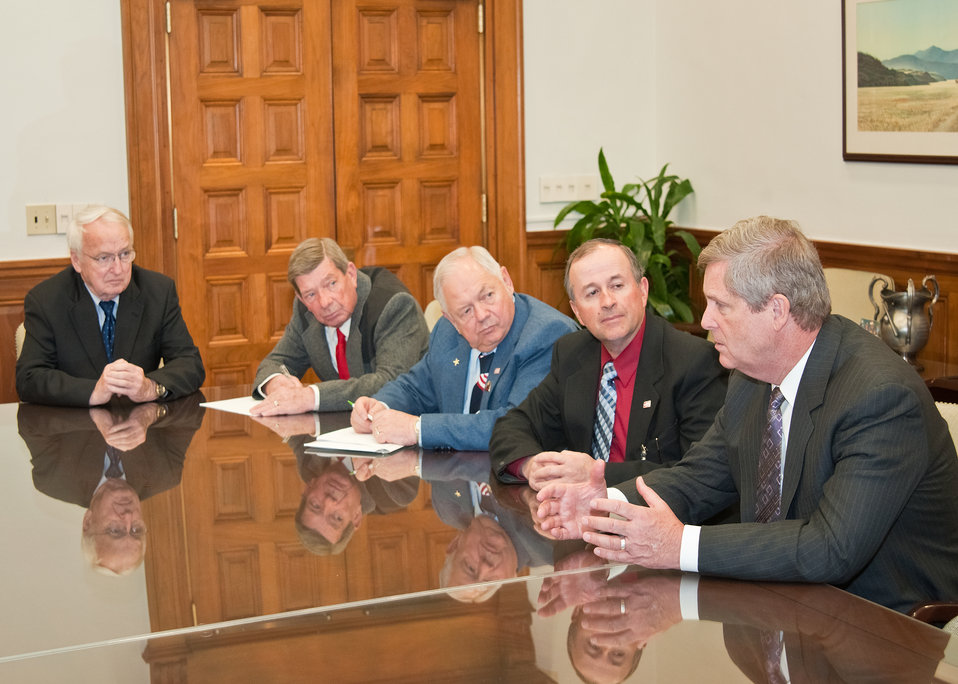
From left: Kevin Concannon, Undersecretary, Food Nutrition and Consumer Services, Ray Lattin, Bob Walter, Don Shawcroft, Colorado Farm Bureau and Agriculture Secretary Tom Vilsack discussed agricultural issues, nutrition being an important topic during the Colorado Farm Bureau’s visit to the United States Department of Agriculture in Washington, DC, Wednesday, March 30, 2011.